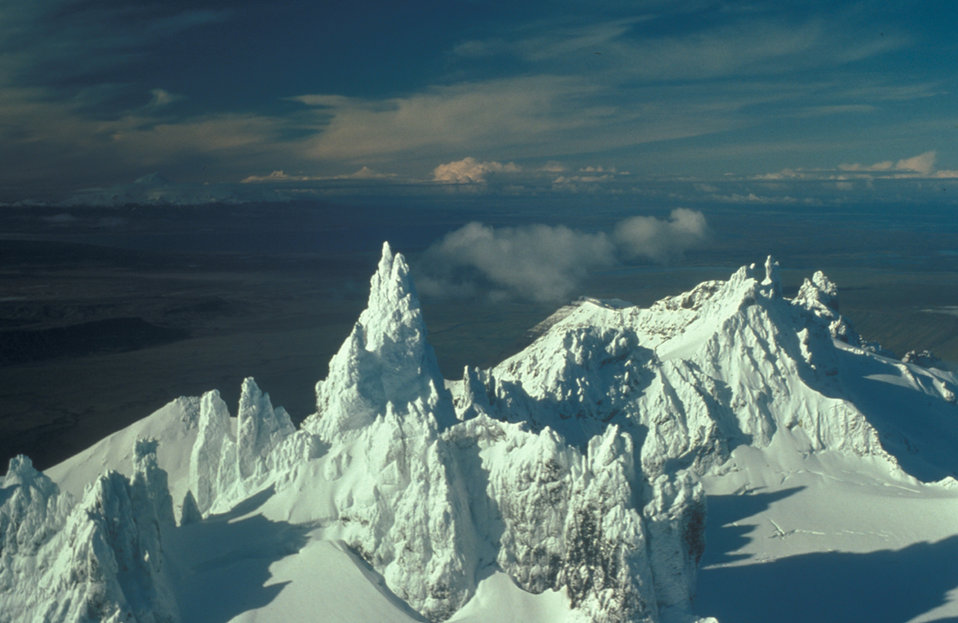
Aghileen Pinnacles including Frosty, Roundtop, Isanotski and Shishaldin in background

Aerial view of the Aghileen Pinnacles including Frosty, Roundtop, Isanotski and Shishaldin in background.